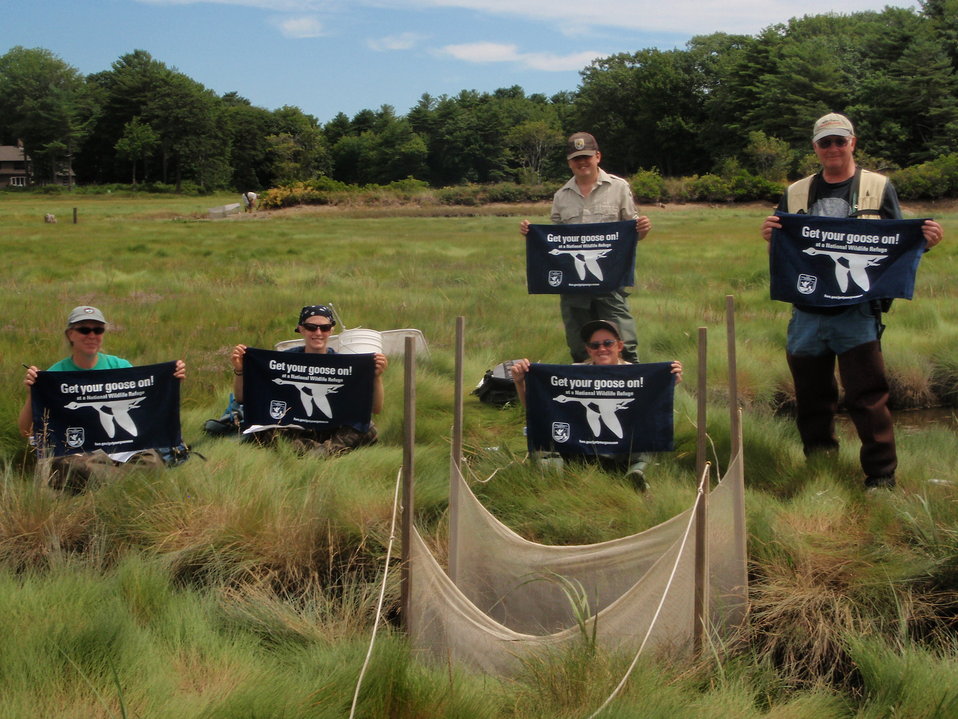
Get Your Goose On!

Marsh photo op! Break during SMI training.